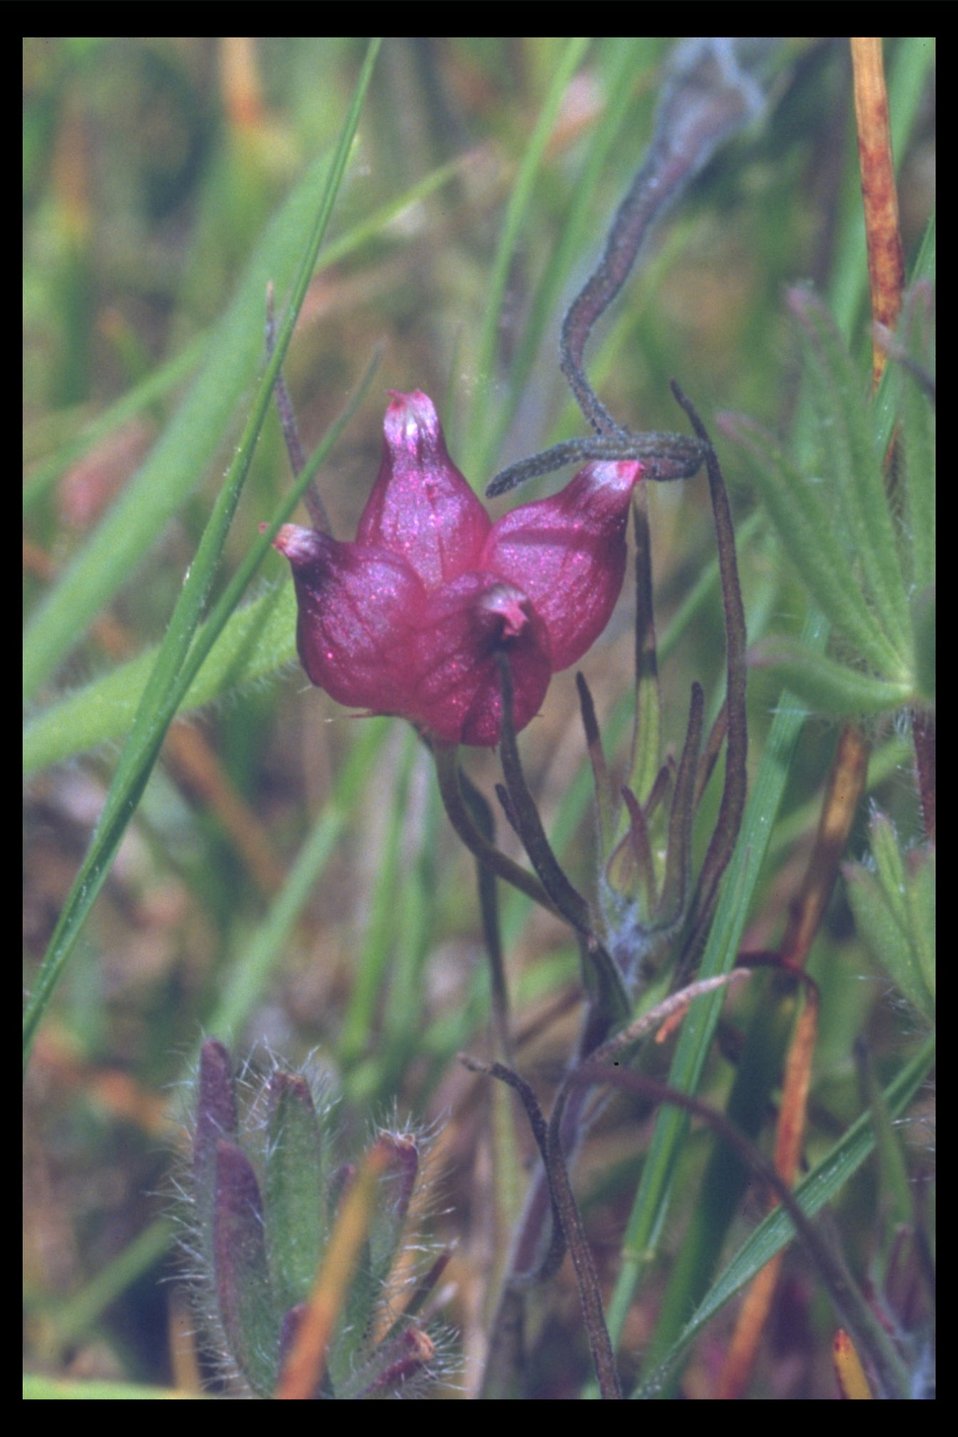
Poverty Clover (Trifolium depauperatum) at Lower Table Rock.